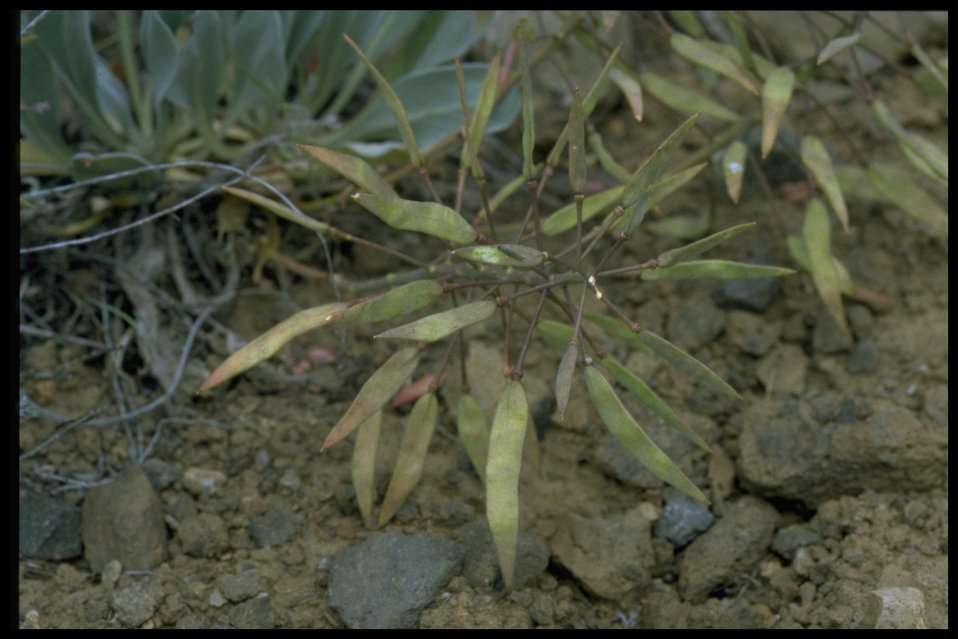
Medium shot of daggerpod (Phoenicaulis cheiranthoides) in fruit.